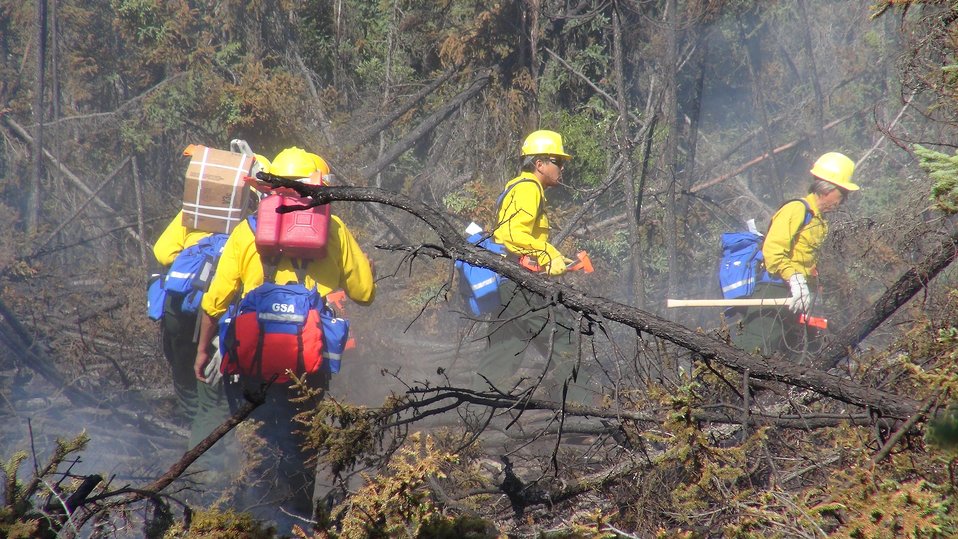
Alaska wildland firefighters enter an active area of the Moon Lake Complex Fires in Tok, AK. The Moon Lake Complex Fires consists of 2 fires, Moon Lake Fire and Tetlin Junction Ridge Fire, along the Alaska and Taylor Highways near Tok, AK. Lightning strikes on Jun. 25, 2013 caused the fires, which have consumed over 49, 959 acres.